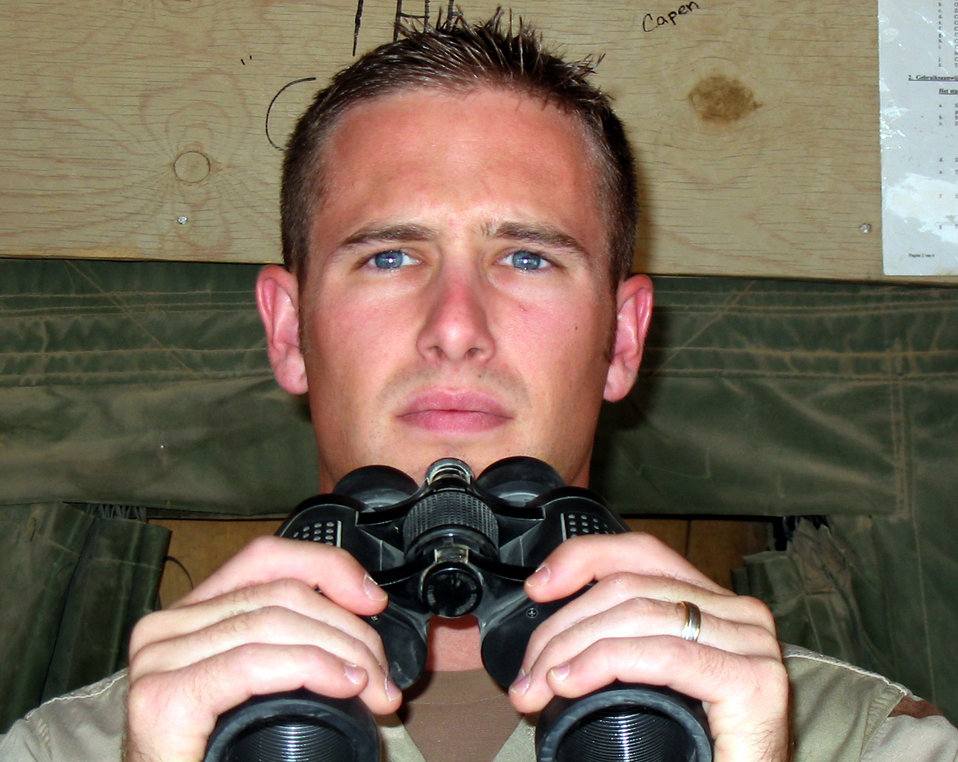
Keeping an eye out

TALLIL AIR BASE, Iraq -- Staff Sgt. Rocky Johnston watches for incoming helicopters needing fuel. Sergeant Johnston is one of 16 Airmen assigned to the U.S. Army's 439th Petroleum, Oil and Lubricant Forward-Area Refueling Point here.